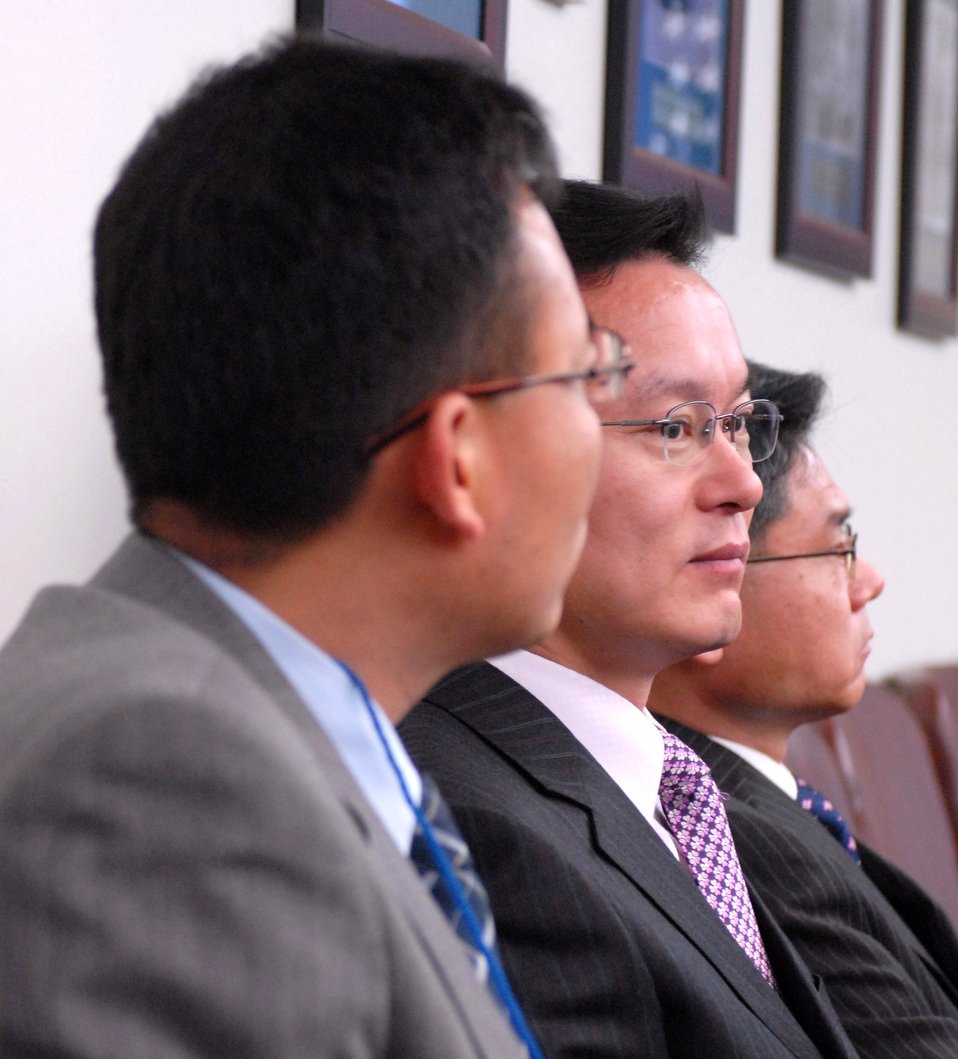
South Korean civic leaders gain insight on Air Force mission

Yi Kil Yong, (from left) Kim Bong Kon and Woo Maeng Yeol listen to a brief on the history of the 7th Air Force Jan. 8 at Osan Air Base, South Korea. Officials from 7th Air Force hosted Gunsan civic leaders in support of the Good Neighbor Program where Kunsan Air Base, South Korea, is educating local civic leaders on the 7th Air Force and 8th Fighter Wing missions while demonstrating how the U.S. Air Force works and trains with South Korean to maintain peace and stability in the region.